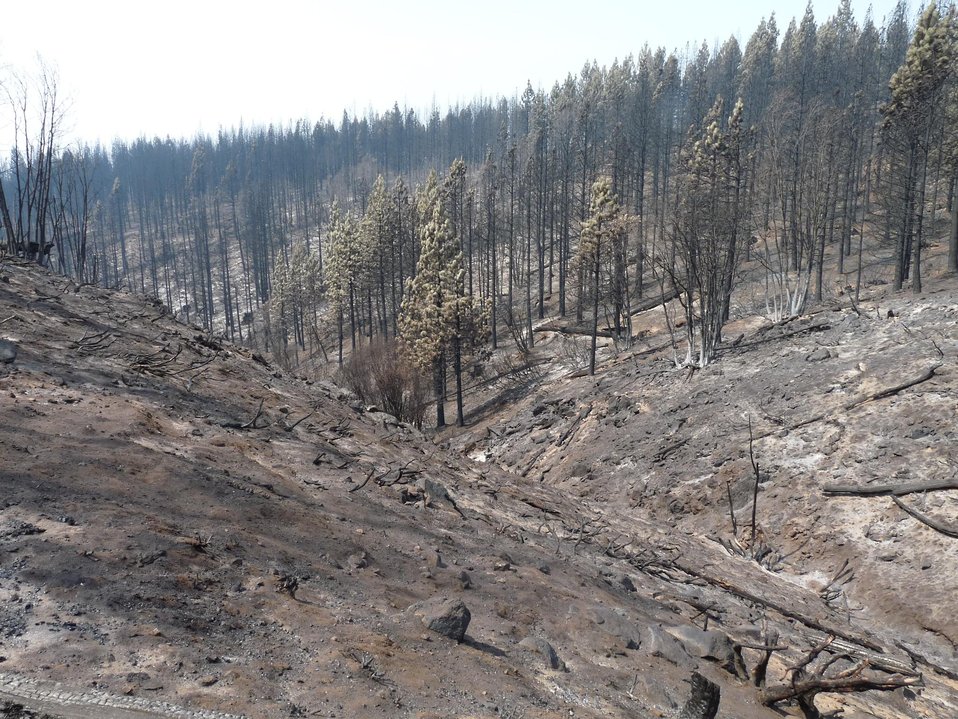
Jawbone Creek eastern tributary below Boggy Meadow shows damage from the Rim Fire. BAER is a rapid assessment of burned watersheds by a BAER team to identify imminent post-wildfire threats to human life and safety property and critical natural or cultural resources on National Forest System lands and take immediate actions to implement emergency stabilization measures before the first major storms. Fires result in loss of vegetation exposure of soil to erosion and increased water runoff that may lead to flooding increased sediment debris flows and damage to critical natural and cultural resources. BAER team members implement seeding and mulching installation to prevent erosion, erect temporary water run-off control structures that will protect recovering areas, and installation of warning signs, replace safety related facilities, remove safety hazards, prevent permanent loss of habitat for threatened and endangered species, and prevent the spread of noxious weeds and protect critical cultural resources. The Rim Fire in the Stanislaus National Forest near in California began on Aug. 17, 2013 and is under investigation. The fire has consumed approximately 256,169 acres and is 84% contained.